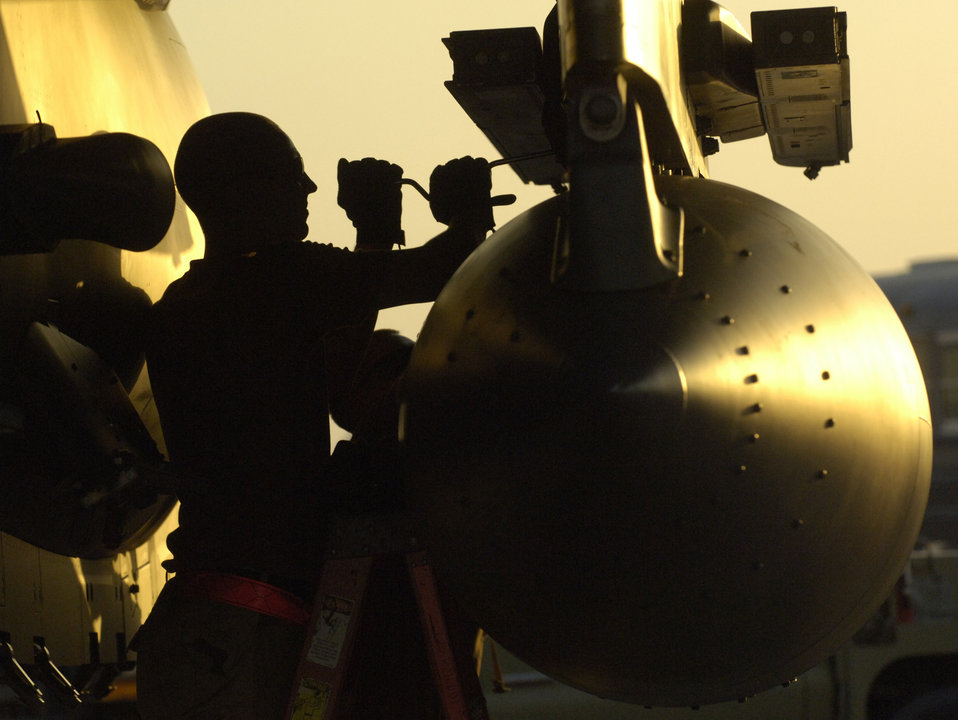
Strike Eagles have landed

Airman 1st Class Henry Rodriguez removes an external fuel tank on an F-15E Strike Eagle at a forward-deployed base in Southwest Asia Sept. 21. The F-15E crew chief is assigned to the 494th Aircraft Maintenance Unit.